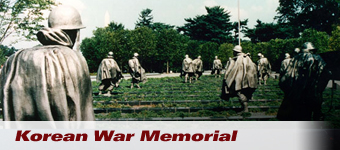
Korean War Memorial